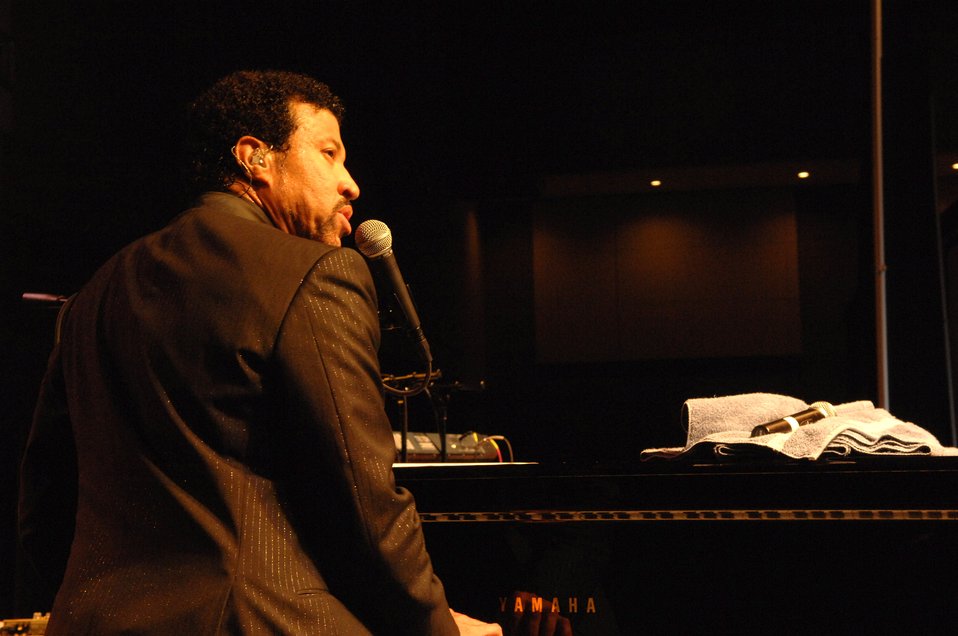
Remembering the Tuskegee Airmen

Lionel Richie performed for Tuskegee Airmen, their families, friends and fellow servicemembers to celebrate the grand opening of the Tuskegee Airmen National Historic Site Oct. 11 at the new Renaissance Hotel in Montgomery, Ala. Moton Field in nearby Tuskegee, Ala., was the only primary flight training facility for the first African American pilot candidates in the Army Air Corps, these pilots are known as the Tuskegee Airmen.